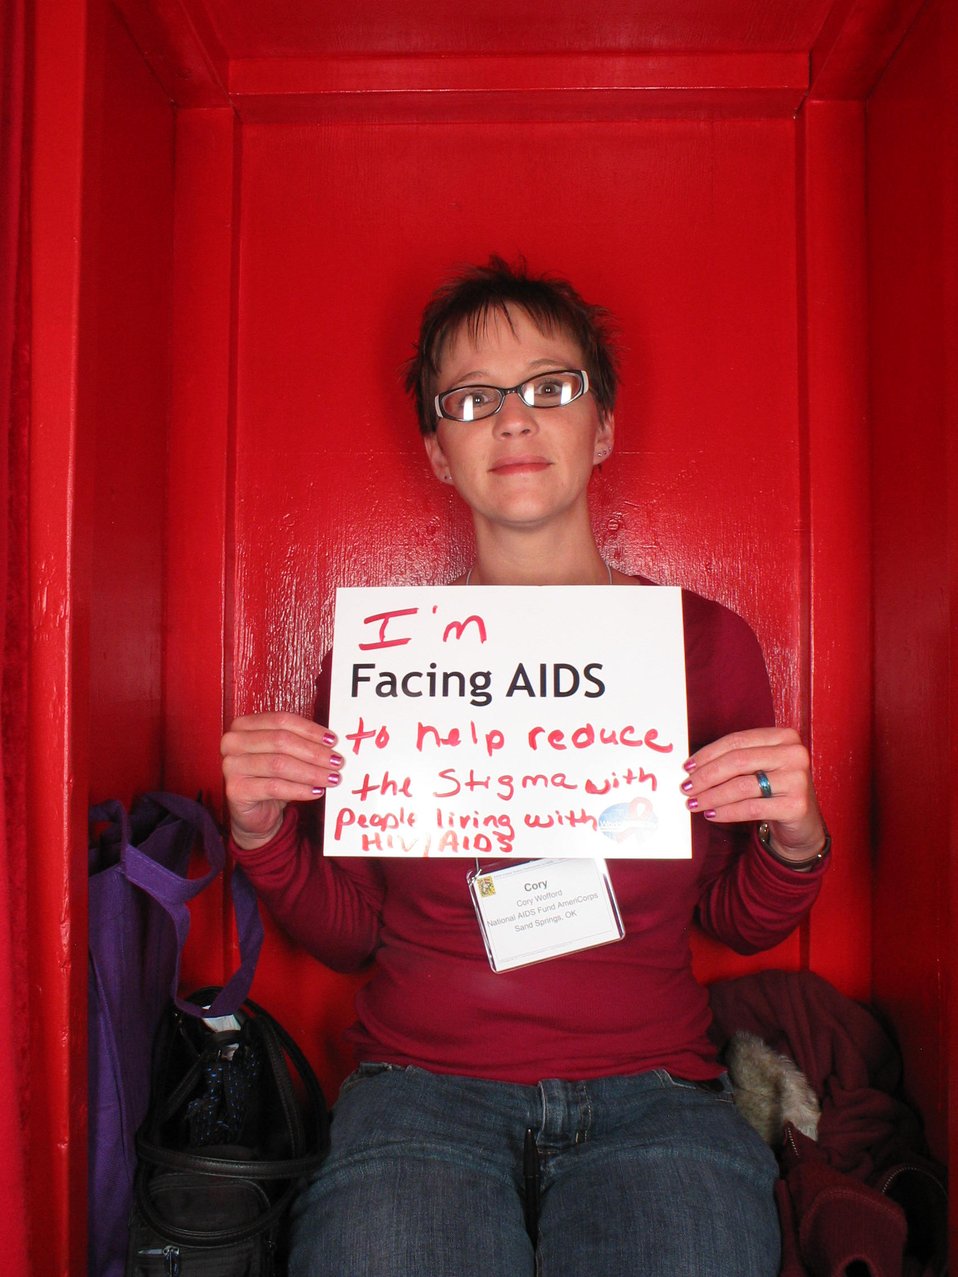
I'm Facing AIDS to help reduce the stigma with people living with HIV/AIDS